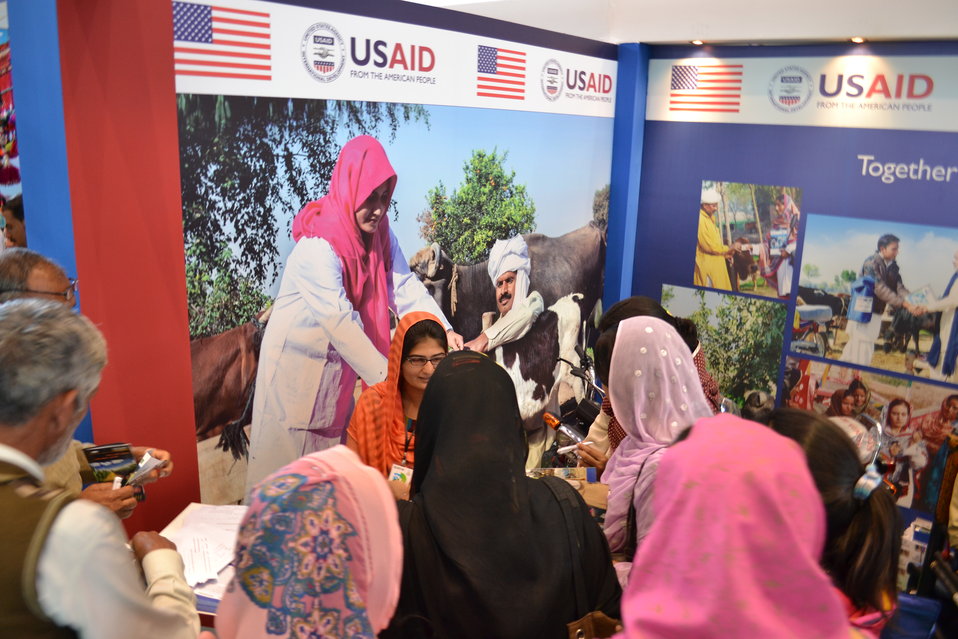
Dairy Project at Dawn Expo 2014